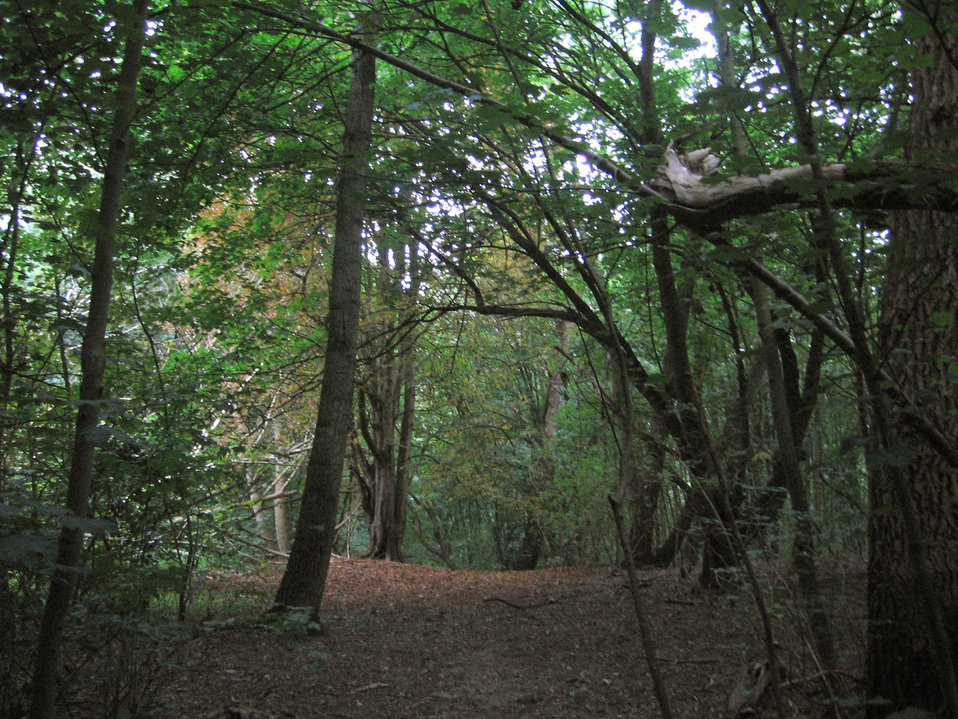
Een typisch tafereel in het nl:Calmeynbos. Foto door Tim Bekaert.